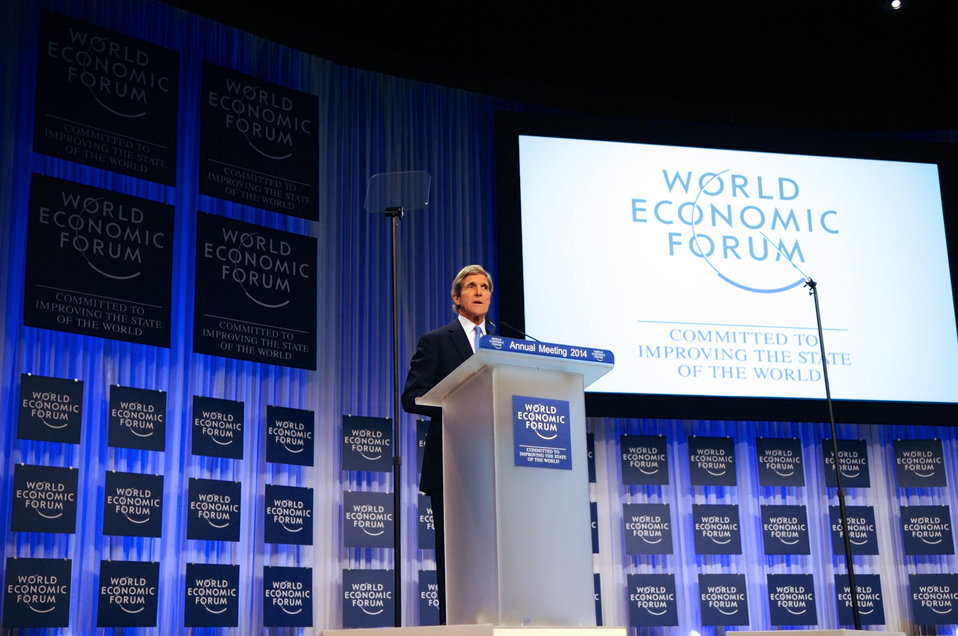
Secretary Kerry Speaks About U.S. Engagement Abroad at World Economic Forum

U.S. Secretary of State John Kerry speaks about U.S. engagement aboard as he addresses the 2014 World Economic Forum in Davos, Switzerland, on January 24, 2014.